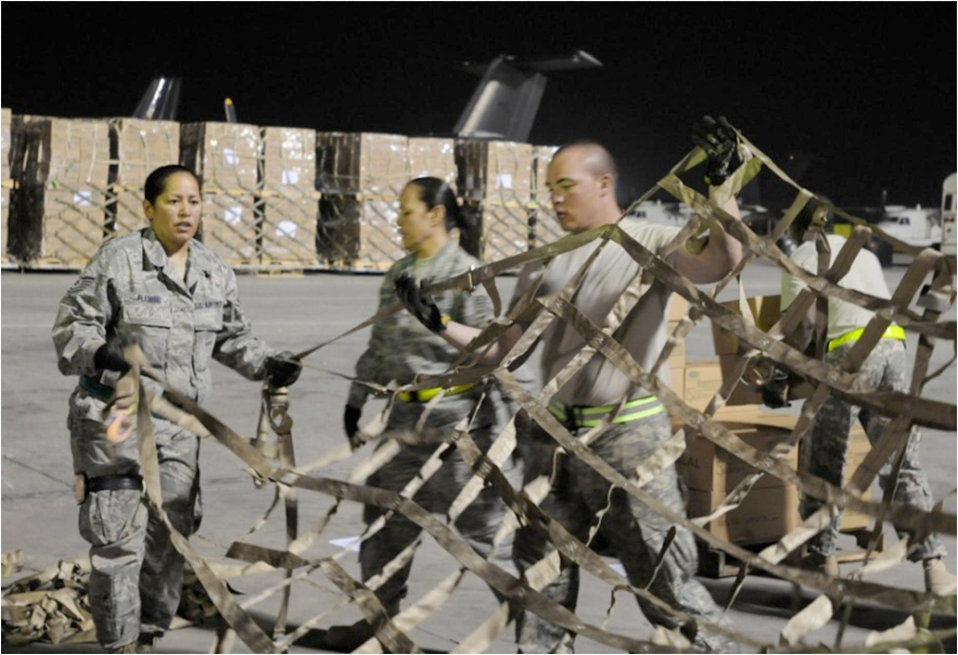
Teamwork provides relief

Tech. Sgt. Cheryl Flemming instructs a pallet-building team on how to prepare a cargo net for placement over a completed pallet Aug. 2, 2010, at Bagram Airfield, Afghanistan, to ensure its contents don't shift during flight. The pallet contains some of the 345 thousand halal meals that have been delivered to northwest Pakistan since July 31, 2010, as part of the humanitarian flood relief assistance provided to the area that's been hit by monsoon rains in recent days. Sergeant Flemming is the 455th Aerial Port Squadron Air Terminal Operations Center quality and control NCO in charge.